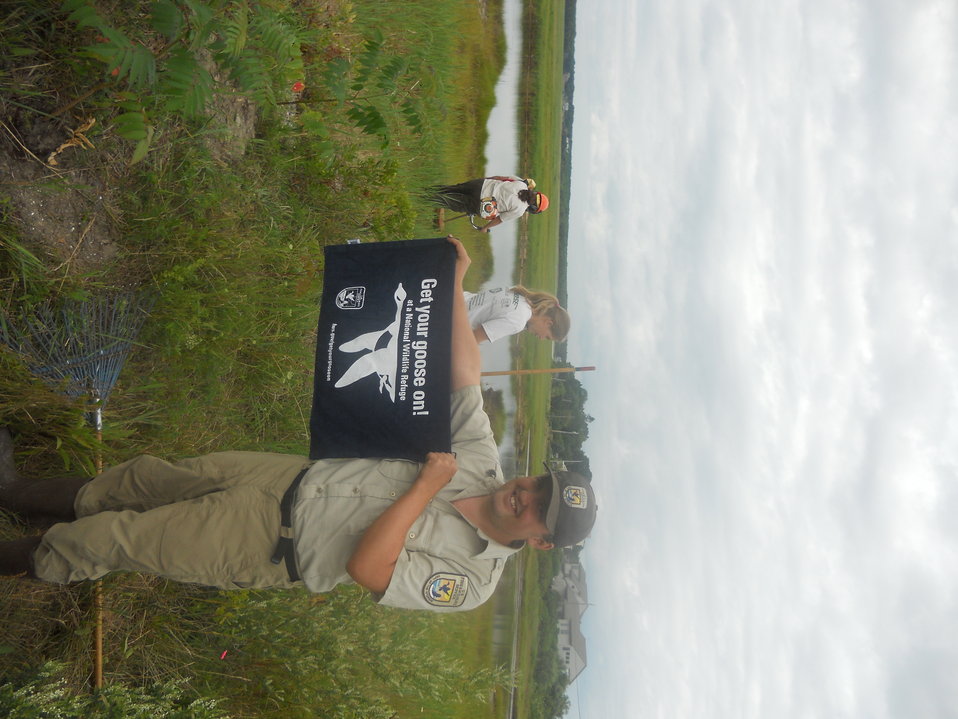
Get Your Goose On!

GYOG! Phrag Cutting with Jordan Kramer.